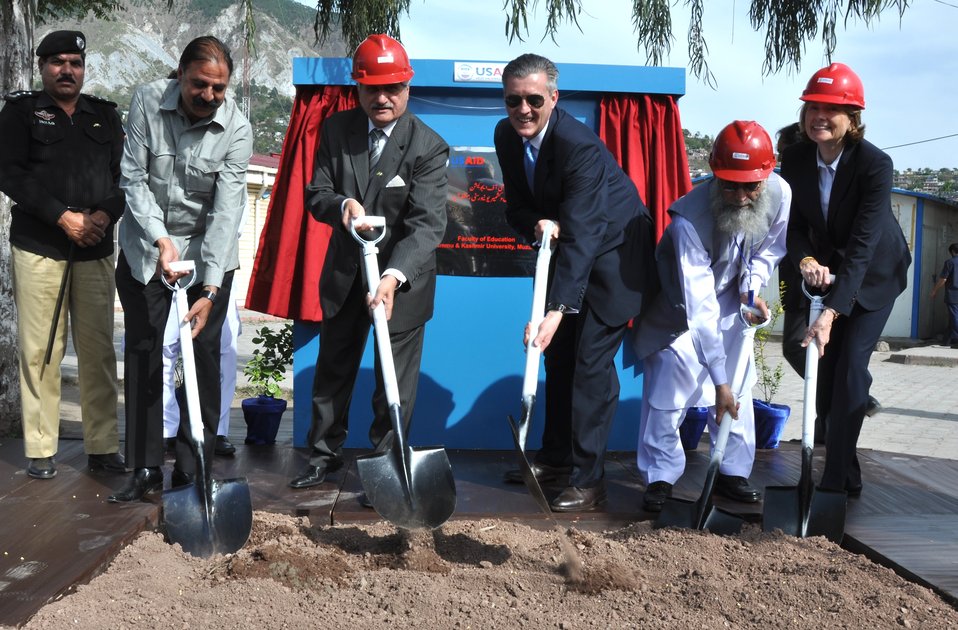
The United States Ambassador to Pakistan, Richard Olson broke ground for a U.S. funded construction of a new Faculty of Education building in Muzaffarabad, AJK. 20